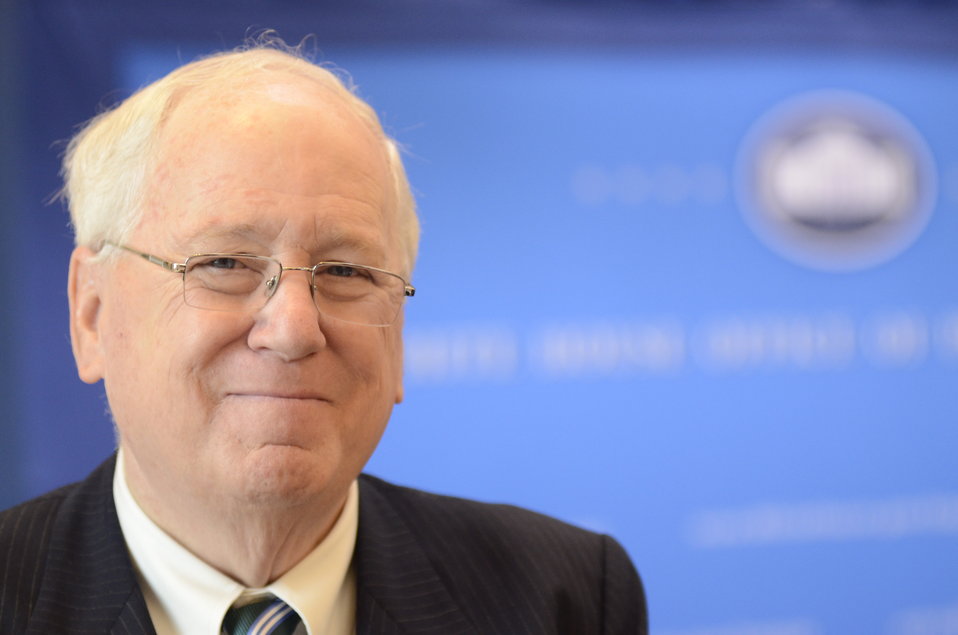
Former U.S. Ambassador to Cambodia and President of the World Food Prize Foundation Kenneth Quinn is one of eleven honorees recognized for his efforts to reduce hunger and increase food security in the U.S. and internationally at the White House Champions of Change Strengthening Food Security at Home and Abroad Event held at the White House on Thursday, September 6, 2012.